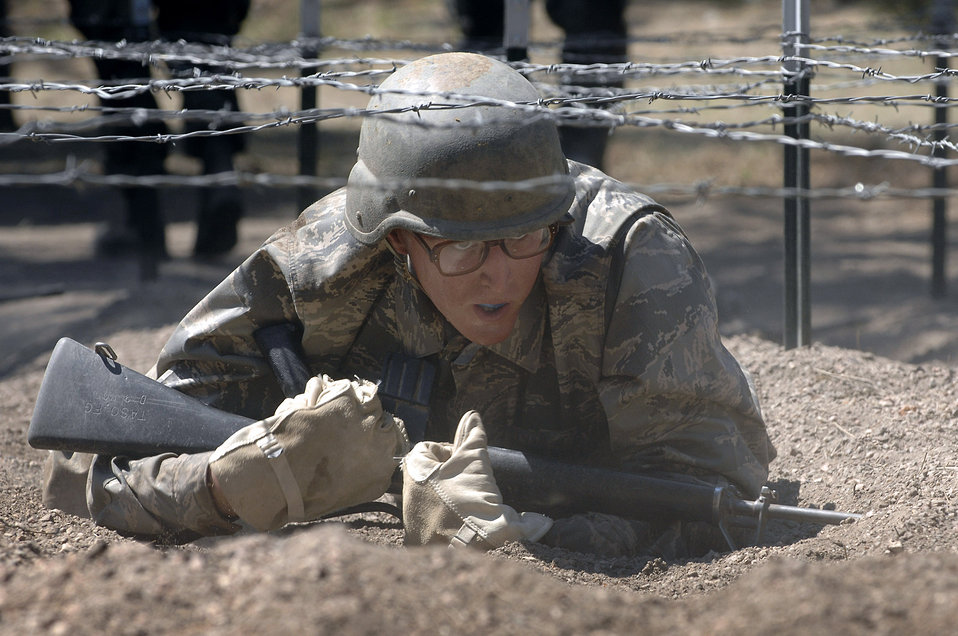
New cadets discover Jacks Valley

U.S. Air Force Academy Basic Cadet Kody O'Connell digs in deep while crossing the low-crawl obstacle on the assault course July 16 at the Jacks Valley training area near Colorado Springs, Colo., during the field training portion of basic training.